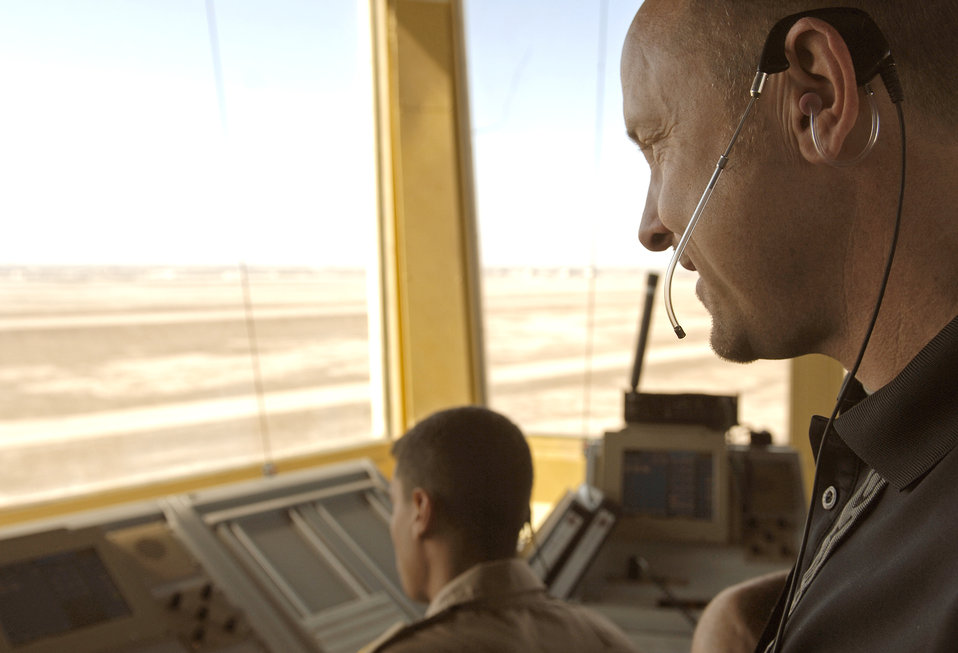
Air traffic advisers

Kenneth Chappell directs airfield traffic with the help of Iraqi air force trainees Feb. 3, 2011. Mr. Chappell is the team lead contractor for Iraq Training and Advisory Mission-Air's air traffic control tower training